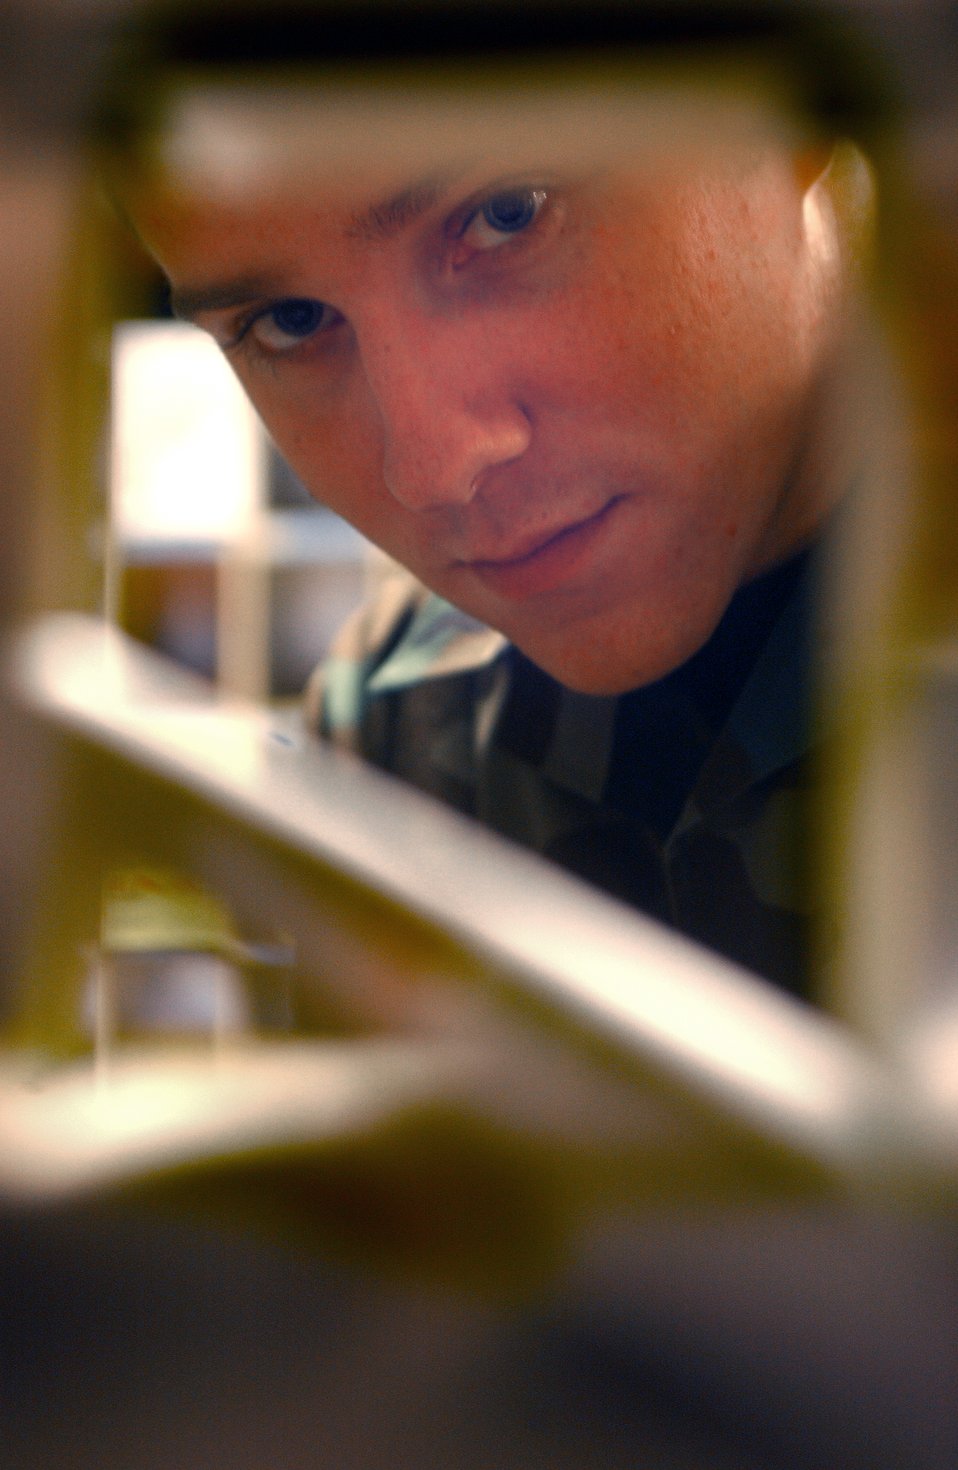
Pitching the mail

AVIANO AIR BASE, Italy -- Airman 1st Class Chris Rowlen pitches mail delivered to the post office here Feb. 15. Airmen Rowlen is assigned to the 31st Communication Squadron.